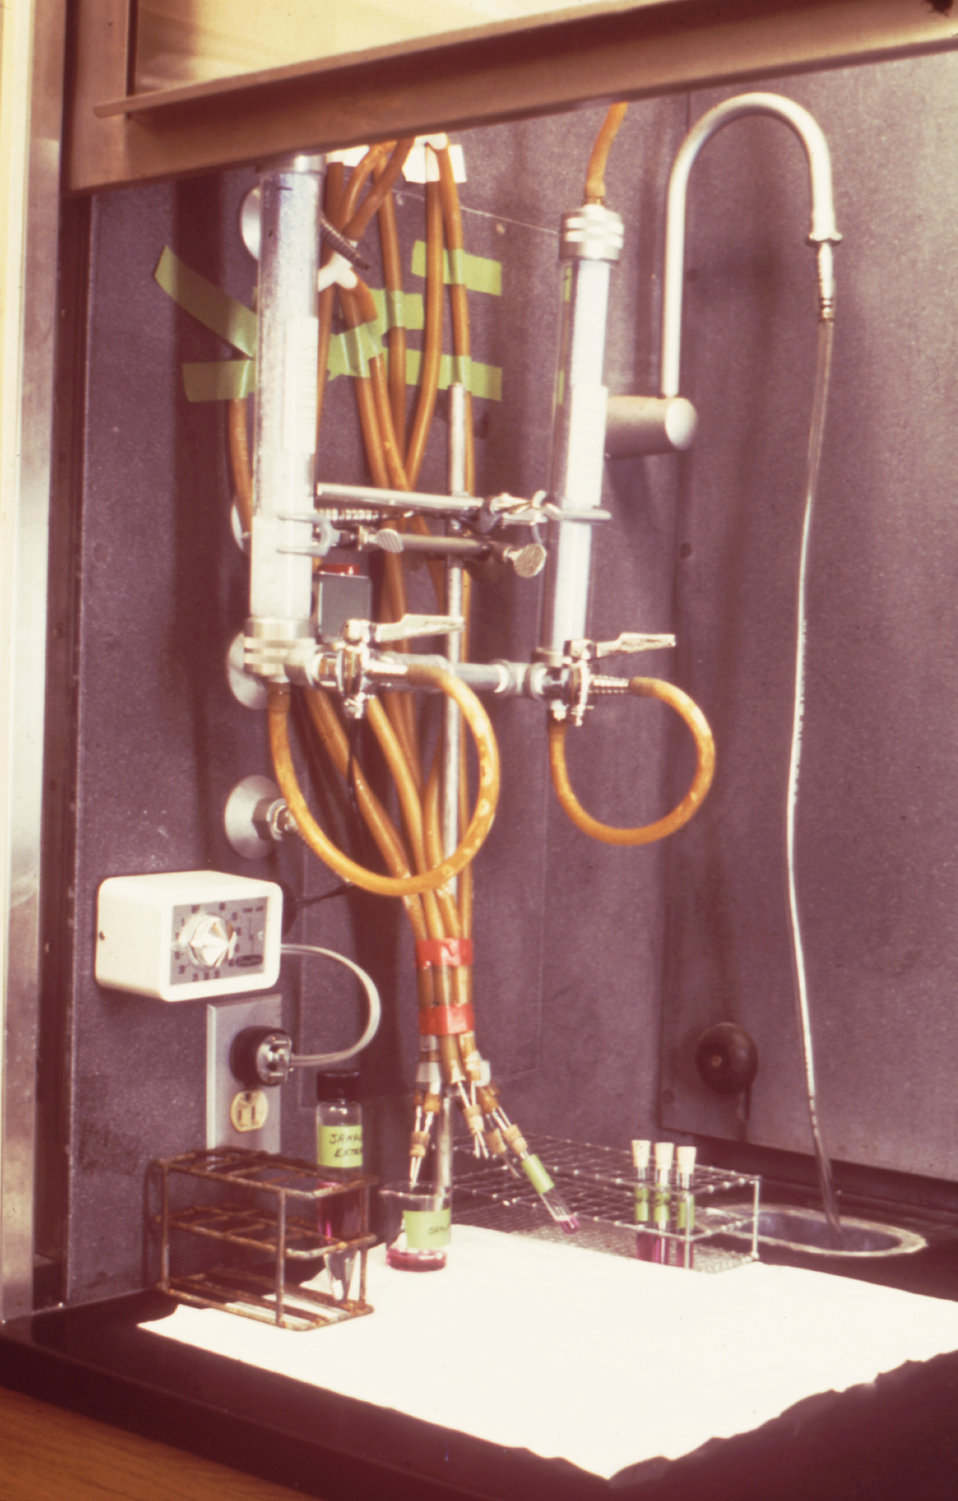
This 1974 photograph depicts an apparatus used in the air evaporation of volatile solvents.